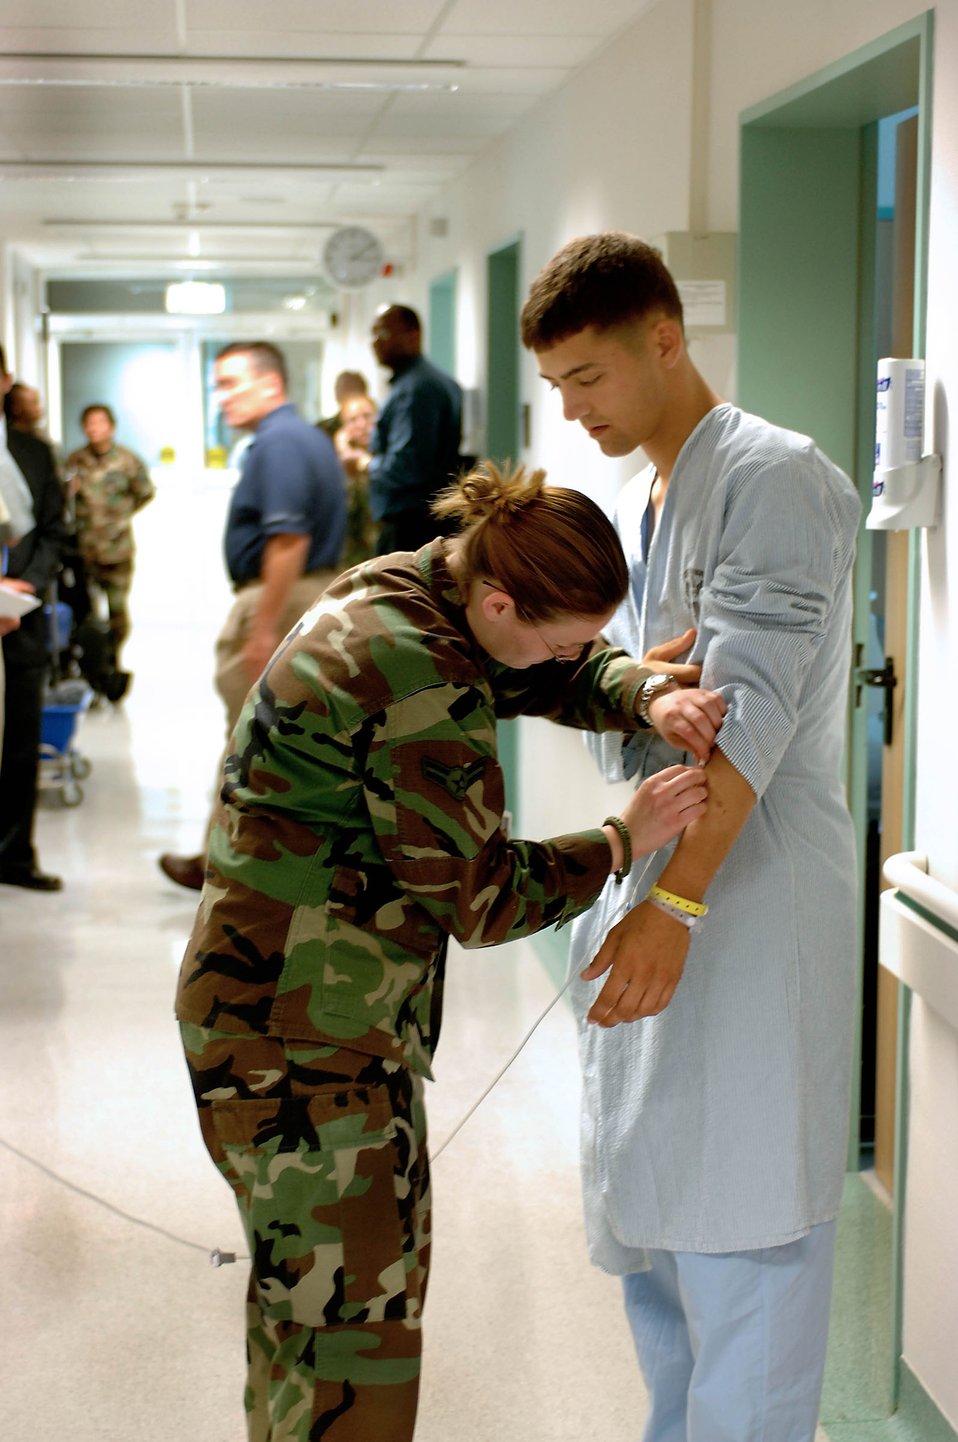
Landstuhl symbol of hope to wounded troops

LANDSTUHL REGIONAL MEDICAL CENTER, Germany -- Airman 1st Class Cassandra Gillard removes an intravenous tube from Marine Corps Cpl. Tyler Einarson's arm. The 3rd Marine Division rifleman is recovering here from gunshots received to the chest and arm while on patrol in northeast Afghanistan in mid-August. A joint team of Airmen, Soldiers, Sailors, Marines and civilians provide care for wounded troops at this medical center. Airman Gillard is a medical technician with the 435th Medical Squadron.